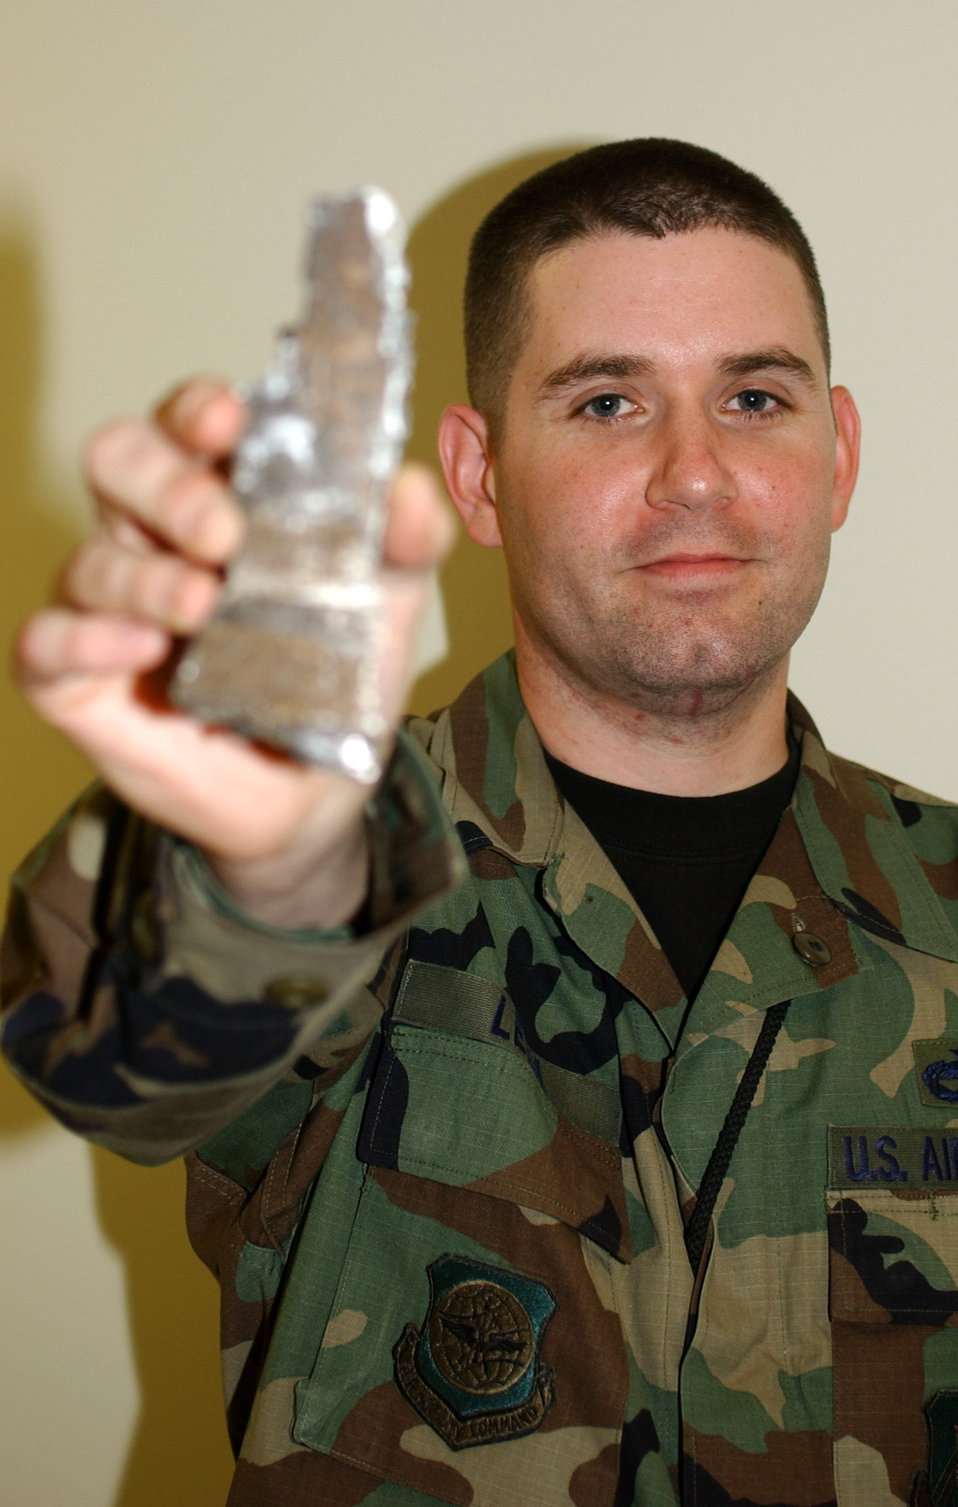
Roadside bombs don't stop NCO from rolling on

Staff Sgt. Chris Lelm holds up a piece of shrapnel found in his vehicle after a roadside bomb, made from a 155 mm artillery shell, exploded next to his truck in Iraq. Sergeant Lelm was one of many Airmen performing convoy duties in support of Operation Iraqi Freedom. Sergeant Lelm was presented the Purple Heart for his wounds. He is assigned to the 319th Logistics Readiness Squadron at Grand Forks Air Force Base, N.D.